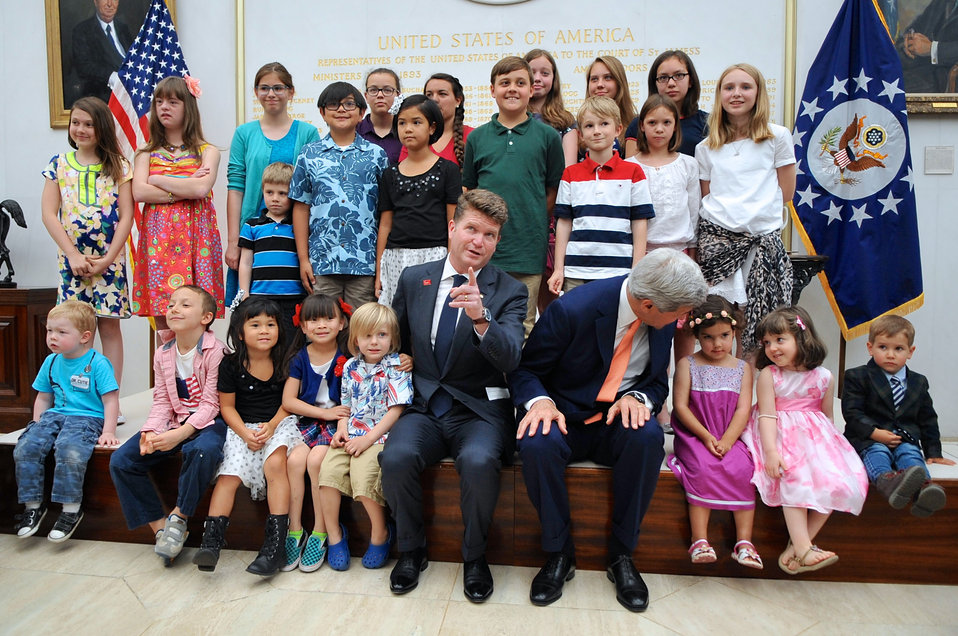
Ambassador Barzun, Secretary Kerry Pose With Children of Embassy London Staff During Meet-and-Greet Gathering

U.S. Ambassador to the United Kingdom Matthew Barzun and U.S. Secretary of State John Kerry sit with a group of children of Embassy London staff members after the Secretary addressed them during a visit to the United Kingdom on June 13, 2014.